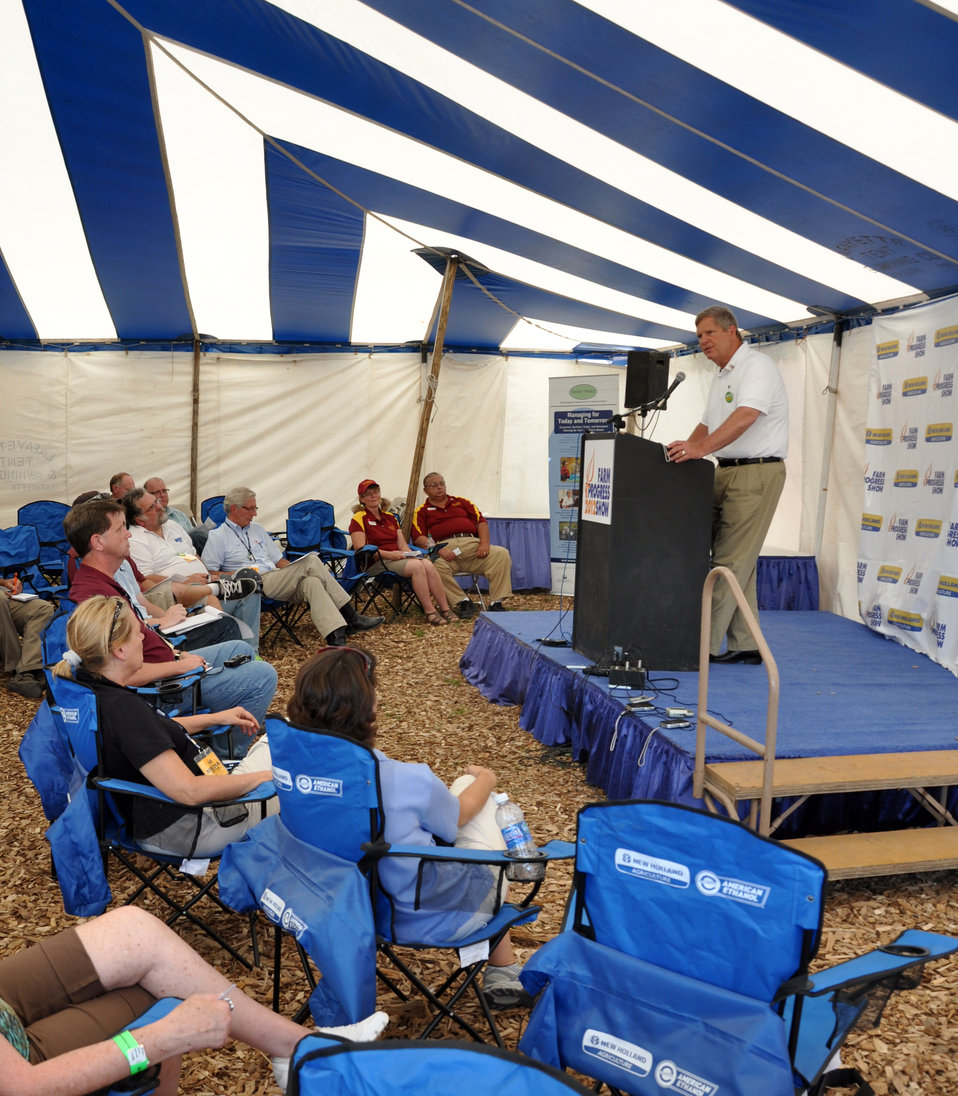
Agriculture Secretary Tom Vilsack visits with the media during the 2012 Farm Progress Show in Boone, Iowa, on Aug. 30, 2012. Vilsack announced new USDA grants for Beginning, Socially Disadvantage Farmers, and Historically Underserved Farmers.